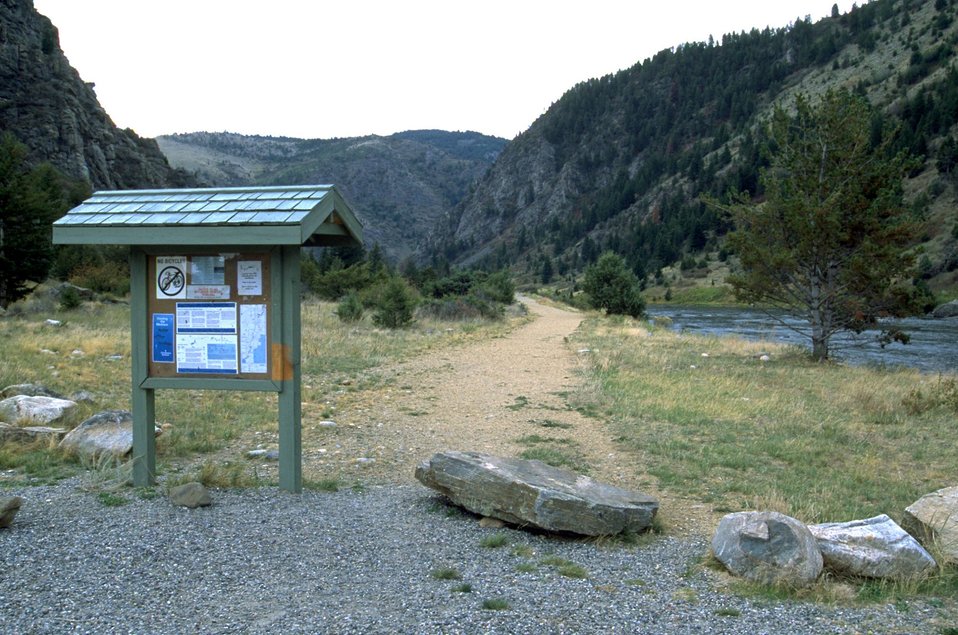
Kiosk at the Trailhead in Bear Trap Canyon